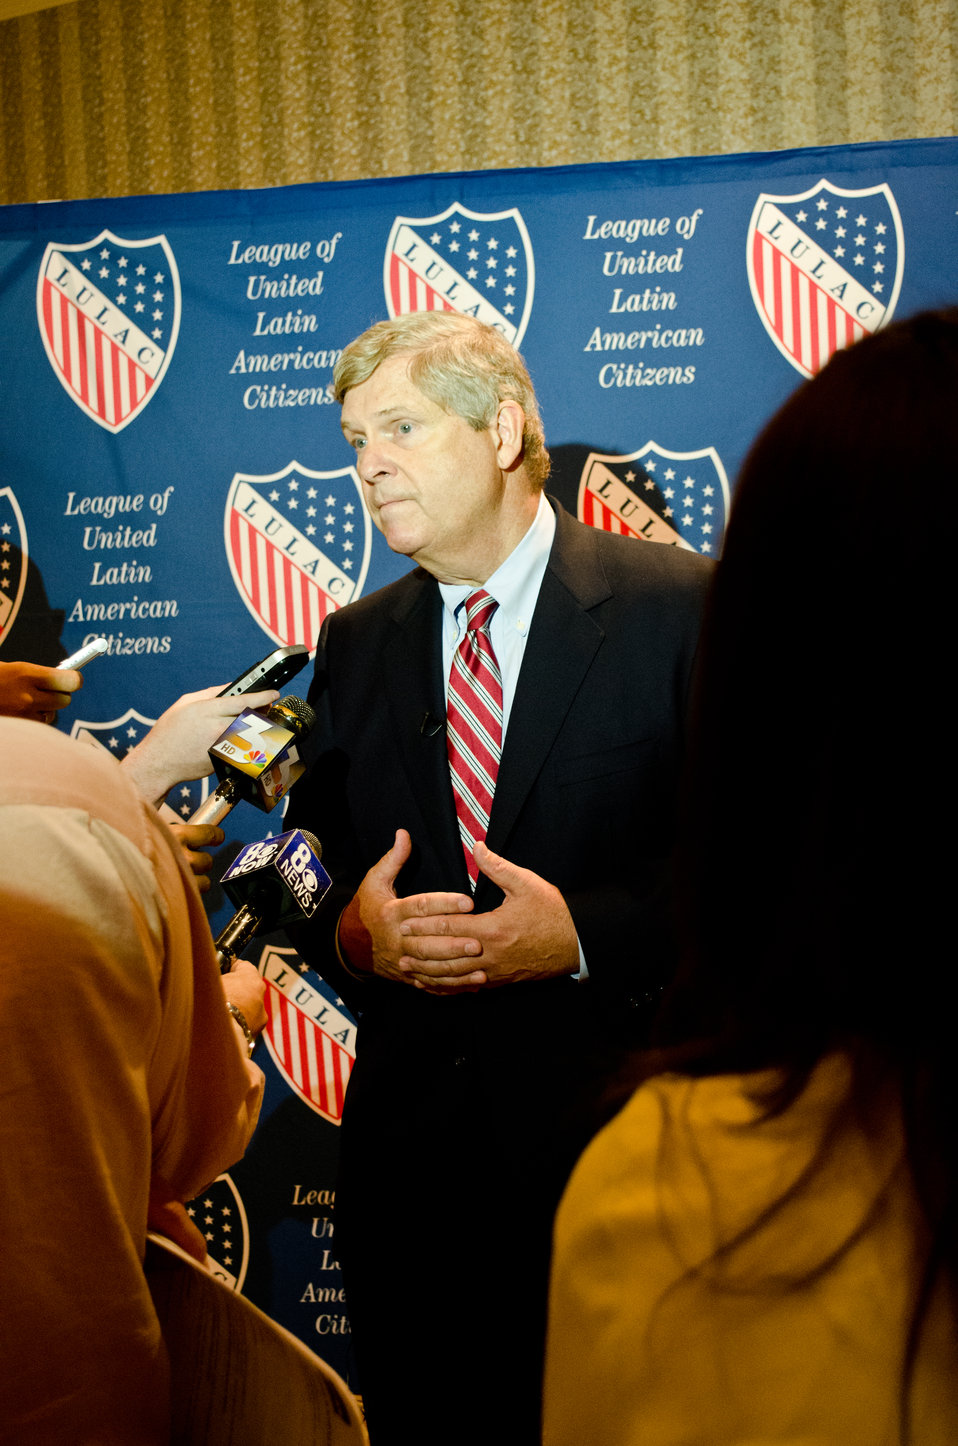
Agriculture Secretary Tom Vilsack speaks with the media at the 84th Annual League of United Latin American Citizens (LULAC) National Convention and Exposition in Las Vegas, NV on Wednesday, Jun. 20, 2013.